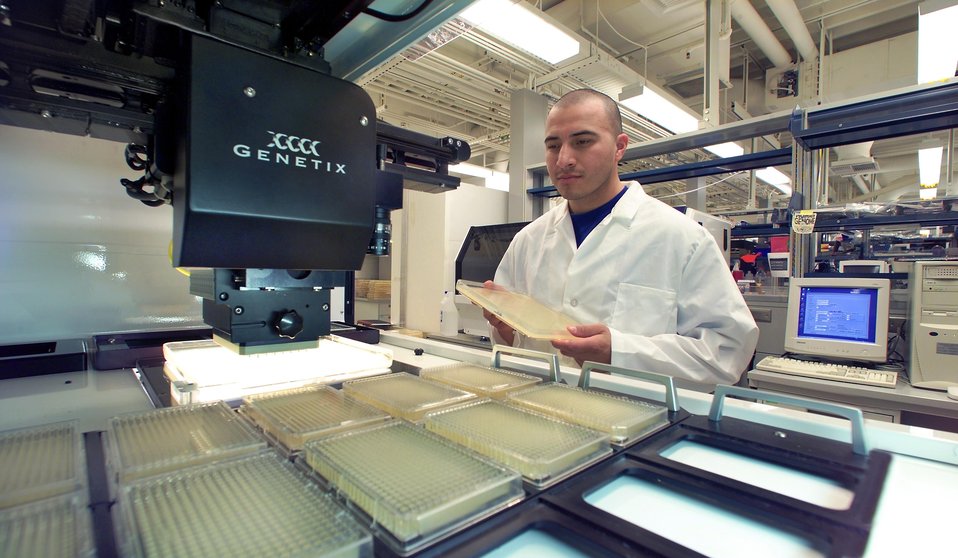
GENETIX COLONY PICKER AT THE JOINT GENOME INSTITUTE.

THE MISSION OF THE DEPARTMENT OF ENERGY'S JOINT GENOME INSTITUTE IS TO DEVELOP AND EXPLOIT NEW SEQUENCING AND OTHER HIGH THROUGHPUT GENOME SCALE AND COMPUTATIONAL TECHNOLOGIES AS A MEANS FOR DISCOVERING AND CHARACTERIZING TH BASIC PRINCIPLES AND RELATIONSHIPS UNDERLYING THE ORGANIZATION, FUNCTION, AND EVOLUTION OF LIVING SYSTEMS.